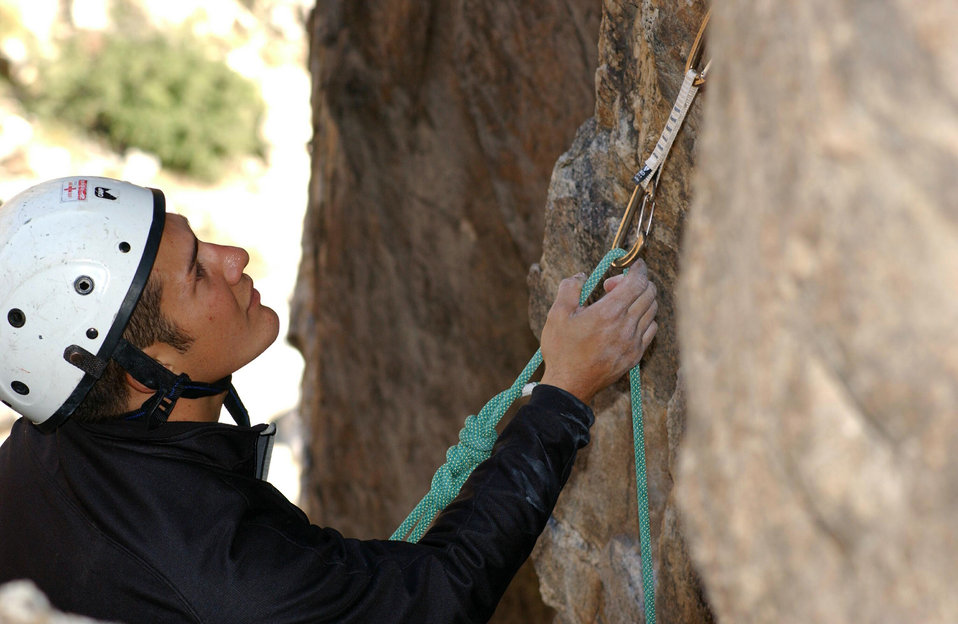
Climb time

TUSCON, Ariz. -- Senior Airman Kenny Ortega climbs Mount Lemmon here during a training mission. He is a pararescueman assigned to the 563rd Rescue Group at nearby Davis-Monthan Air Force Base.